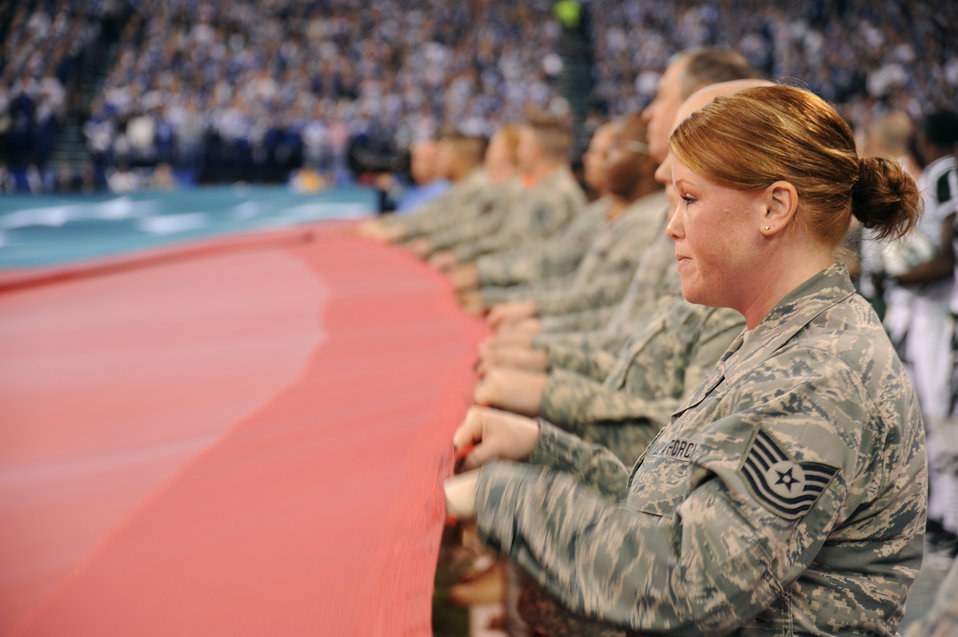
Airmen honor the colors before NFL's AFC Championship Game

Tech. Sgt. Channa Johnson holds onto a 100-yard-long American flag during the national anthem of the NFL's American Football Conference Championship Game between the New York Jets and the Indianapolis Colts in Indianapolis, Ind. The Colts won the game 30-17 and will face the New Orleans Saints in the Super Bowl Feb. 7, 2010, in Miami. Sergeant Johnson is from the Indiana National Guard.